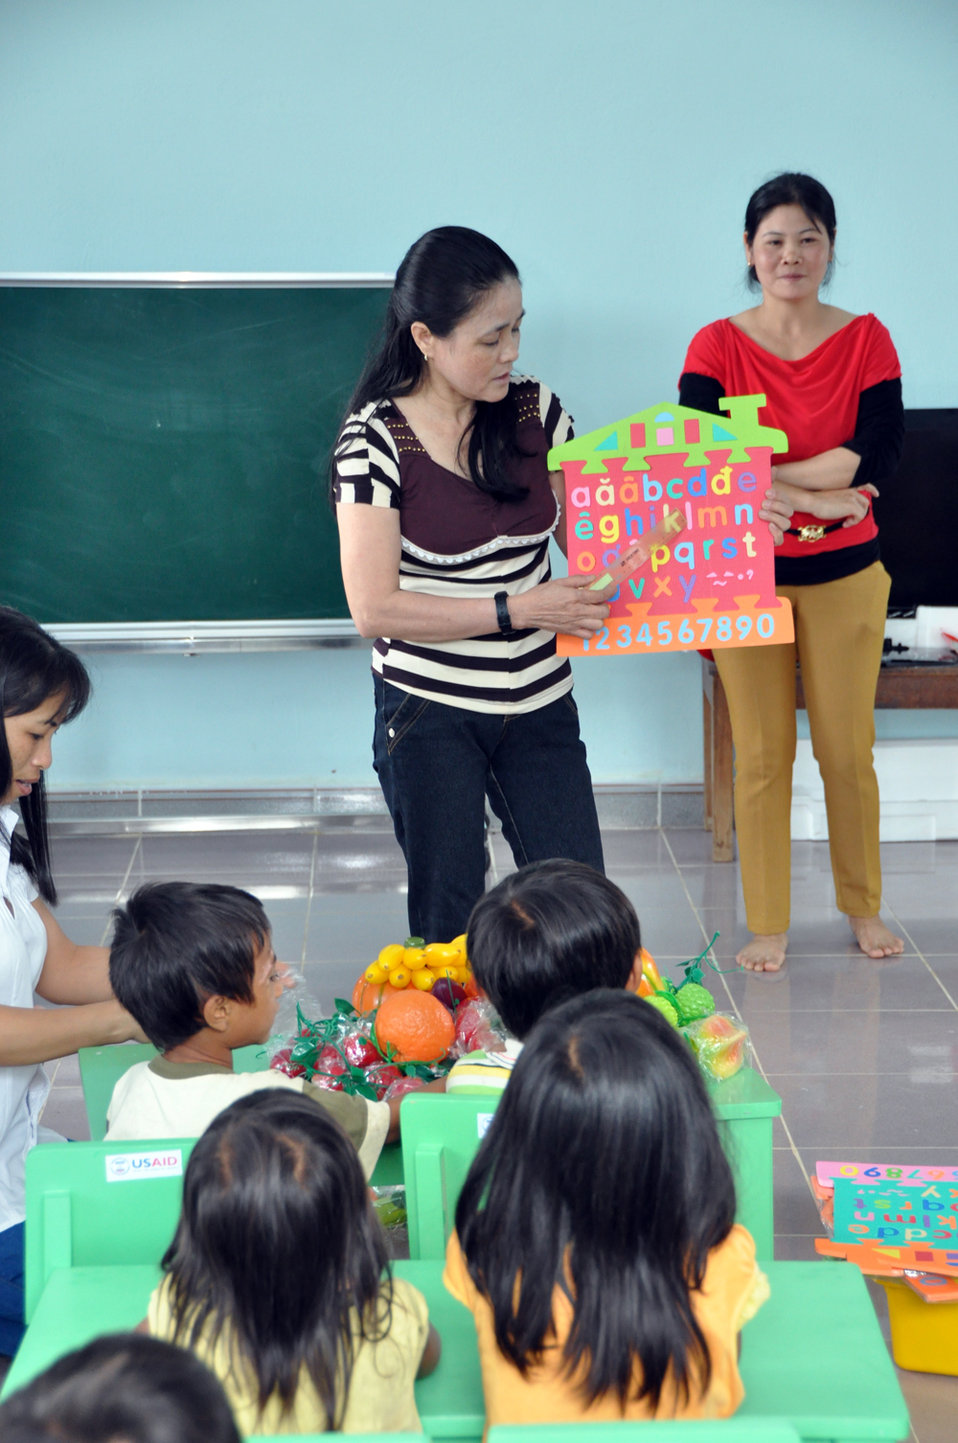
USAID contributes to refurbished pre-schools and teacher training in Vietnam